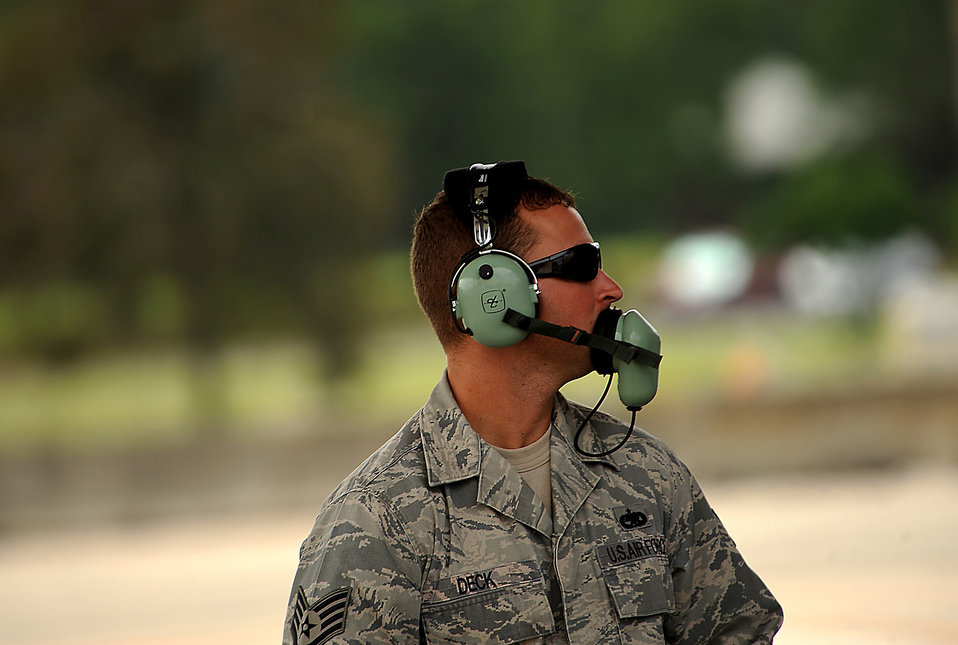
F-35A Lightning II joint strike fighter crew chief Staff Sgt. Jeremy Deck from the 58th Aircraft Maintenance Unit at Eglin Air Force Base, Fla., preflights the jet before taking off for a local training mission over the Emerald Coast Sept. 18, 2012.